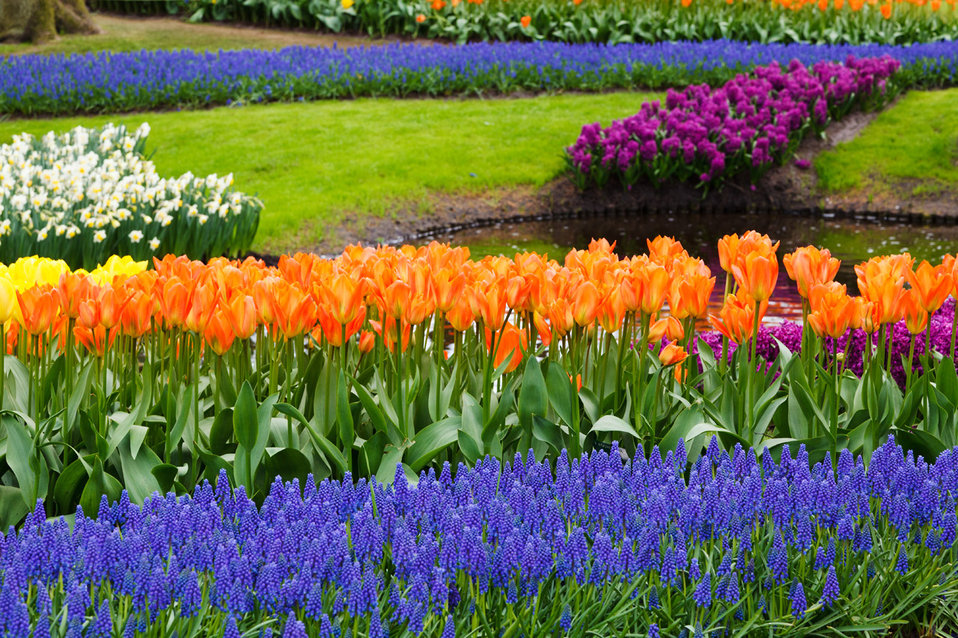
Spring in garden

Colorful keukenhof gardens in spring.